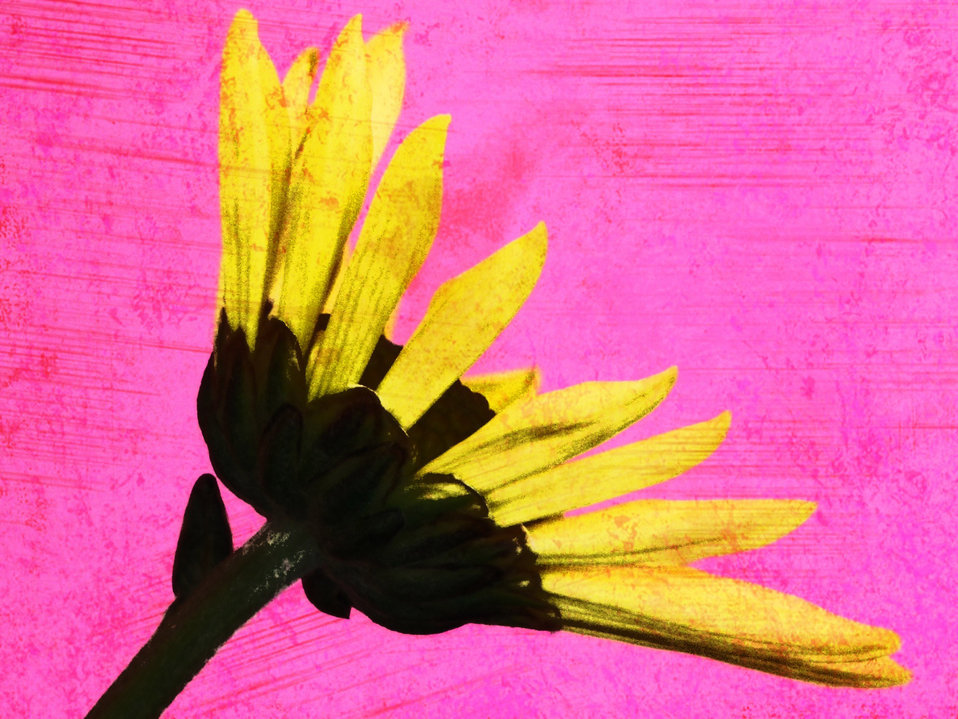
Daisy

Abstract flower.